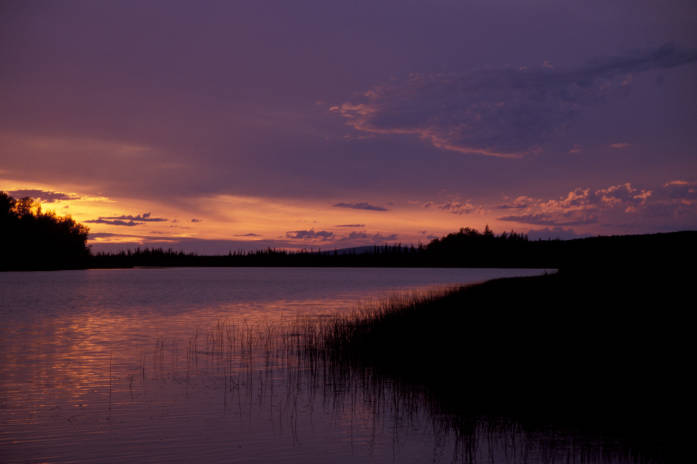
Sunset on the Innoko National Wildlife Refuge